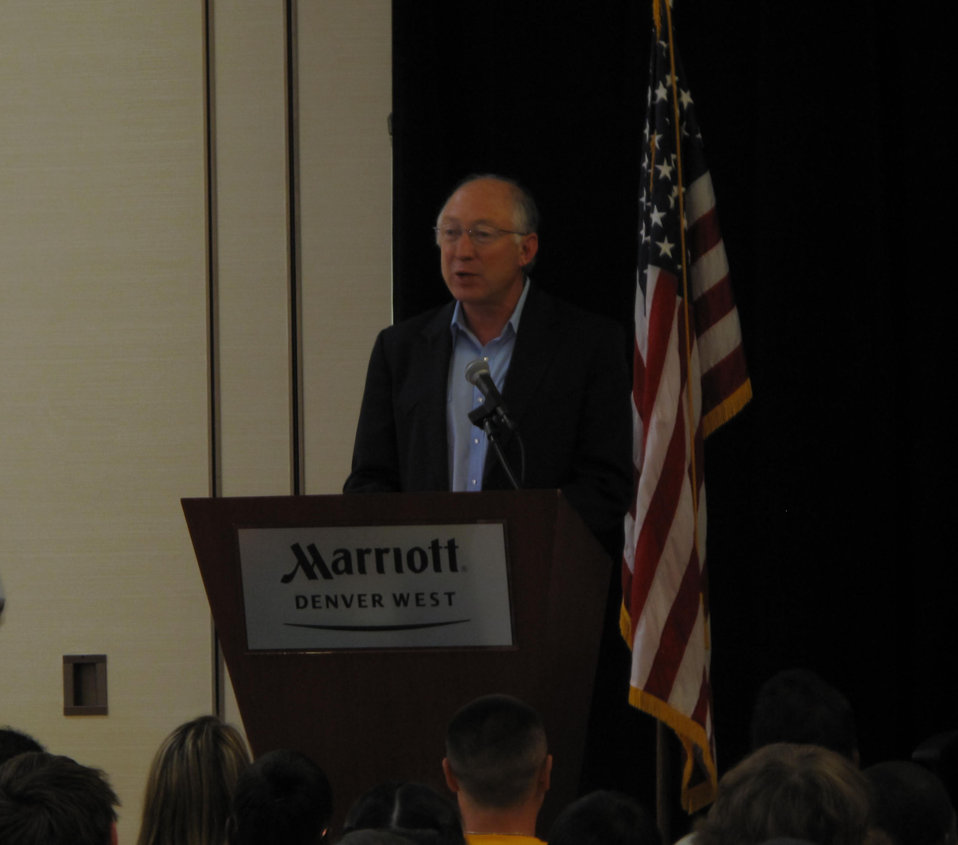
America's Great Outdoors Initiative

Secretary Salazar speaks about enjoying the outdoors to an audience of 500 plus in Golden Colorado.